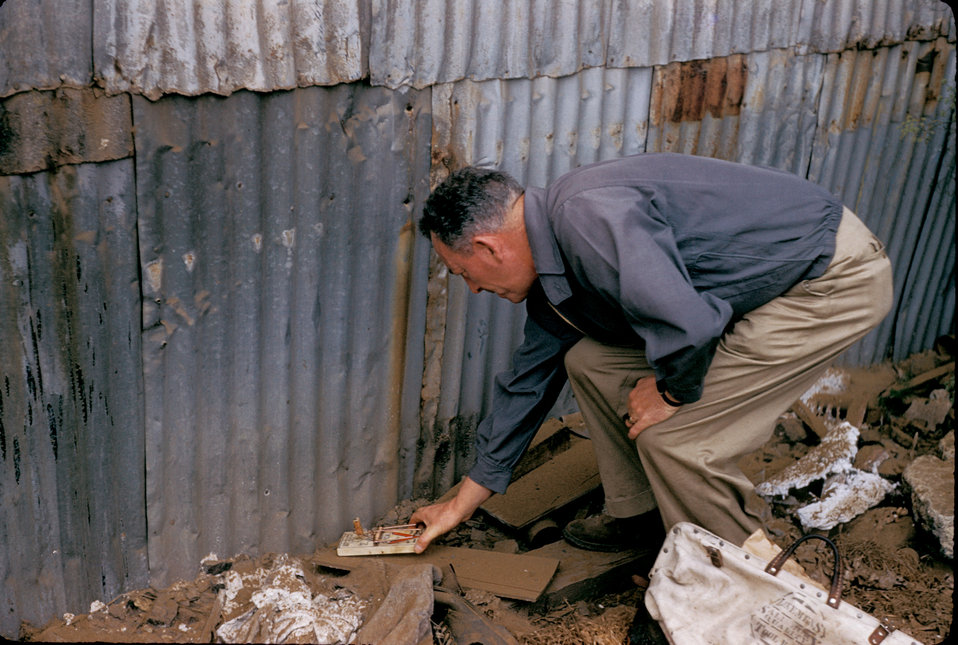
A man setting traps for rats during a plague study.